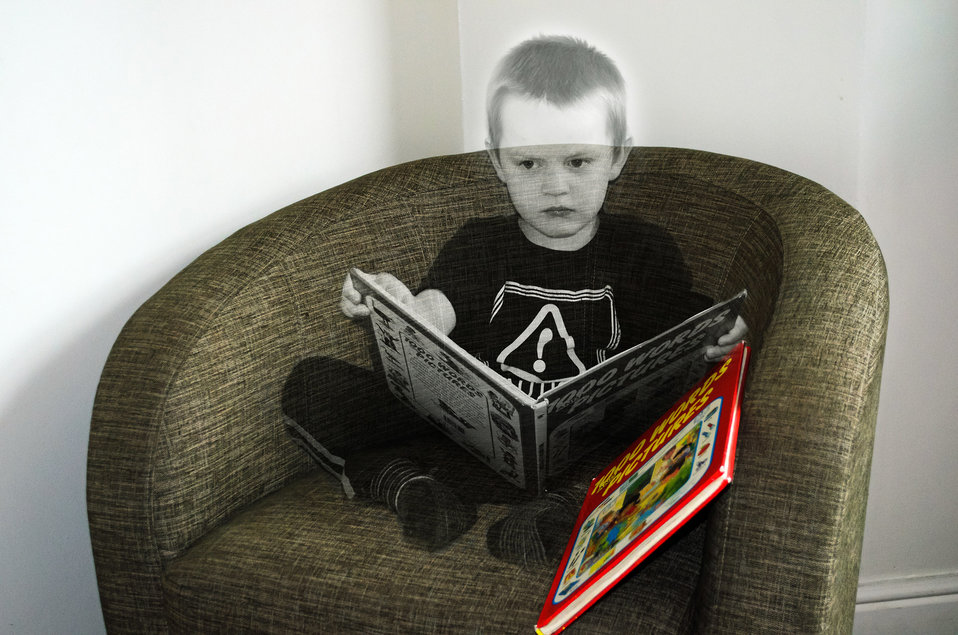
I read - background.